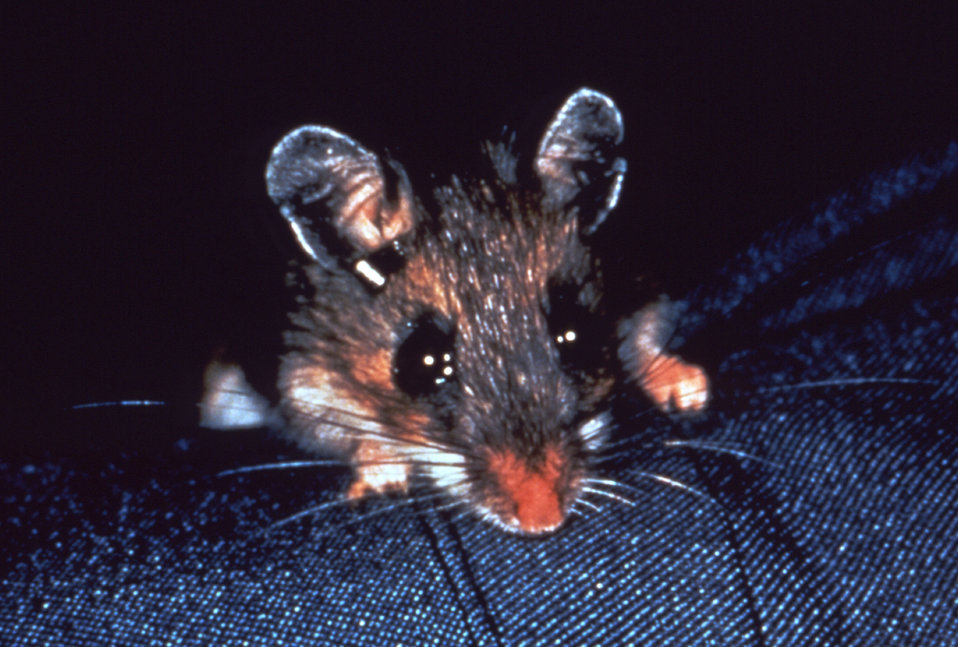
This photograph depicts a white-footed mouse, Peromyscus leucopus, which is a wild rodent reservoir host of ticks, which are known to carry the bacteria, Borrelia burgdorferi, responsible for Lyme disease.